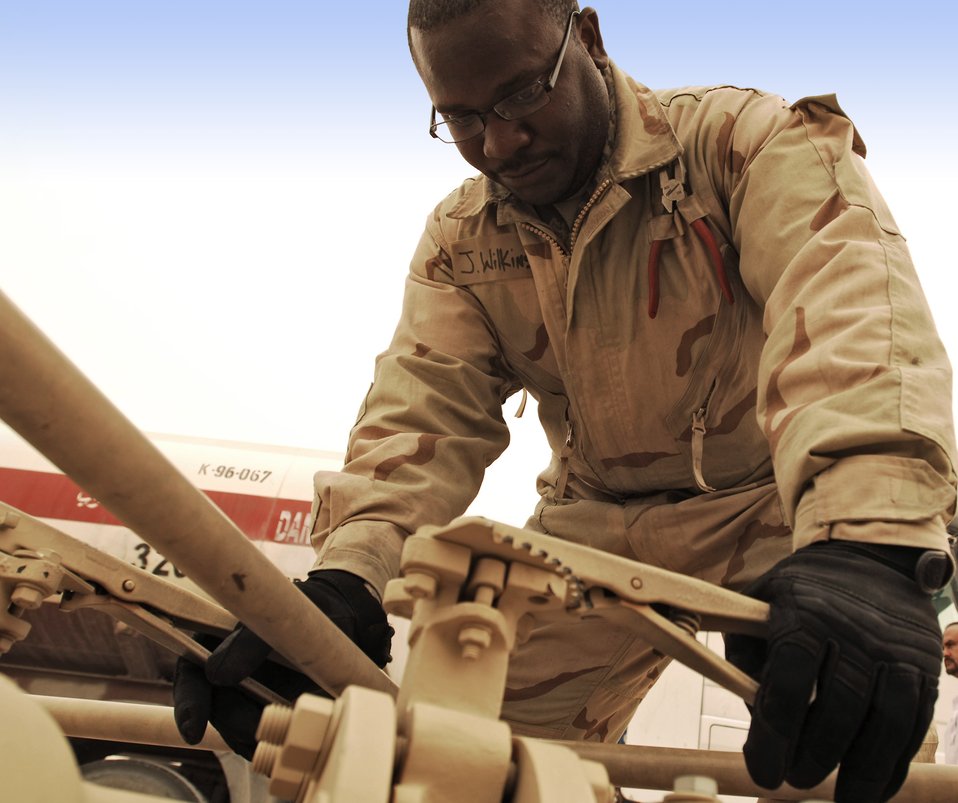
Fueled to fight

Staff Sgt. Jerome Wilkins watches the sight glass on a receipt wye skid valve to ensure the flow stays constant during the fuel download from trucks into a bladder storage unit Feb. 26 in Southwest Asia. The fuels management flight is responsible for inventorying the fuel daily, and the transfer and issue of fuel to both vehicle operators and aircrews in support of operations Enduring Freedom and Iraqi Freedom. Sergeant Wilkins is a fuels technician from the 386th Expeditionary Logistics Readiness Squadron.